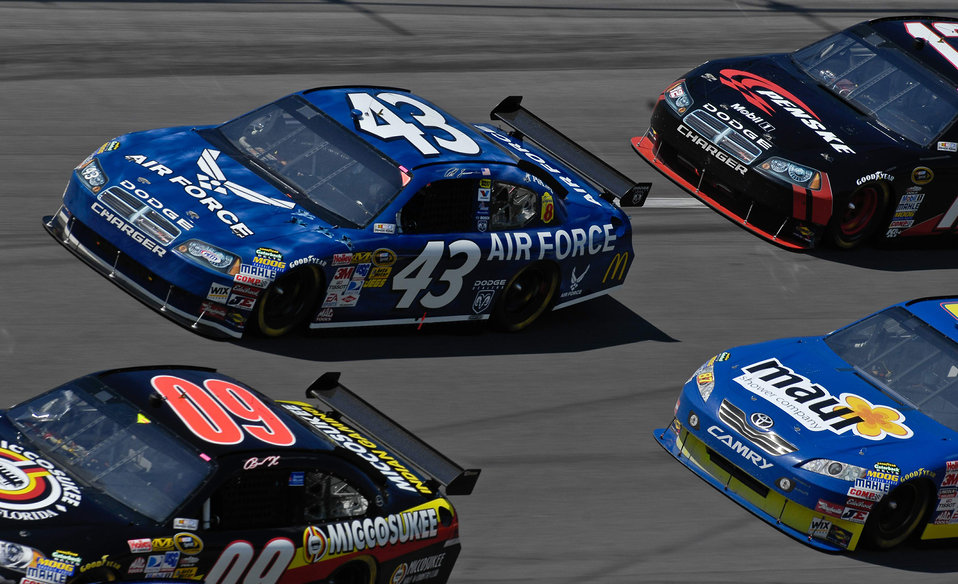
Air Force at Talladega

The #43 Air Force-sponsored NASCAR driven by Reed Sorenson makes its way to the front during the Aaron's 499 race April 26 at Talladega Superspeedway in Talladega, Ala. This was the first race for the #43 Richard Petty Motor Sports car featuring the Air Force primary paint scheme. The car started 41st but finished 11th in the race.